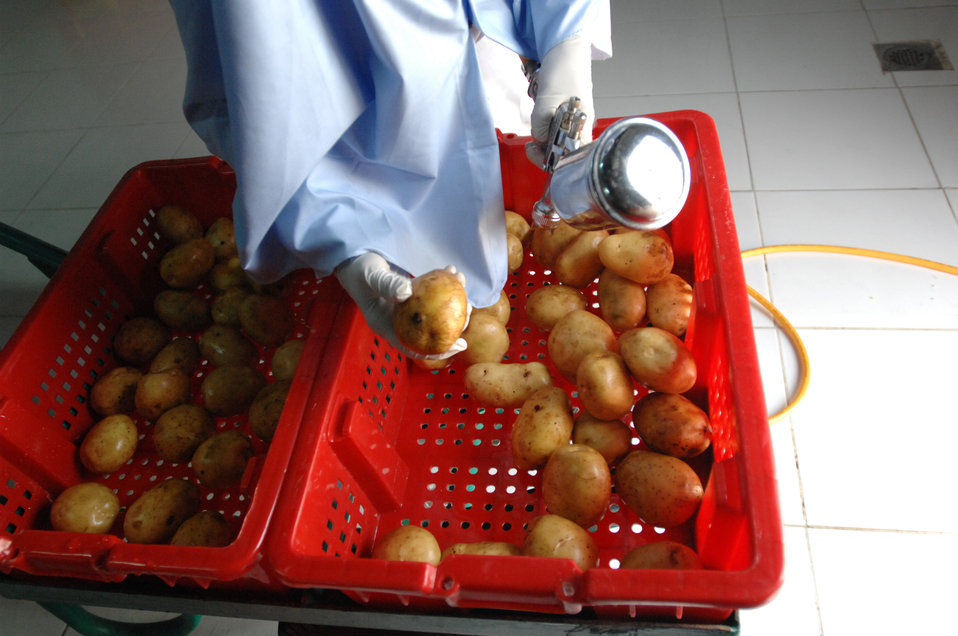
110209sv Shah222

A women at the Surkh Rod vegetable packing facility dries potatoes on Wednesday, February 9, 2011. (S.K. Vemmer/Department of State)